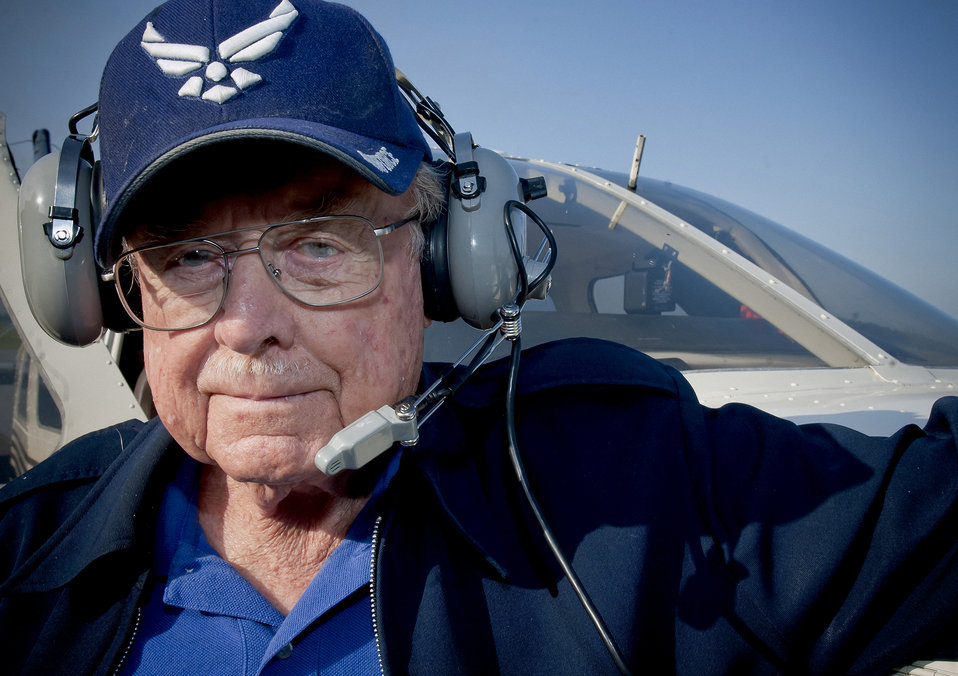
Seven decades of flying

Retired Col. Clarence Parker has flown aircraft for more than 70 years. He was an instructor pilot and flew missions during World War II, the Berlin Airlift, the Korean War and the Vietnam War. Colonel Parker decided to hang up his wings by flying his final flight May 20, 2011, at the Valdosta Regional Airport in Valdosta, Ga.